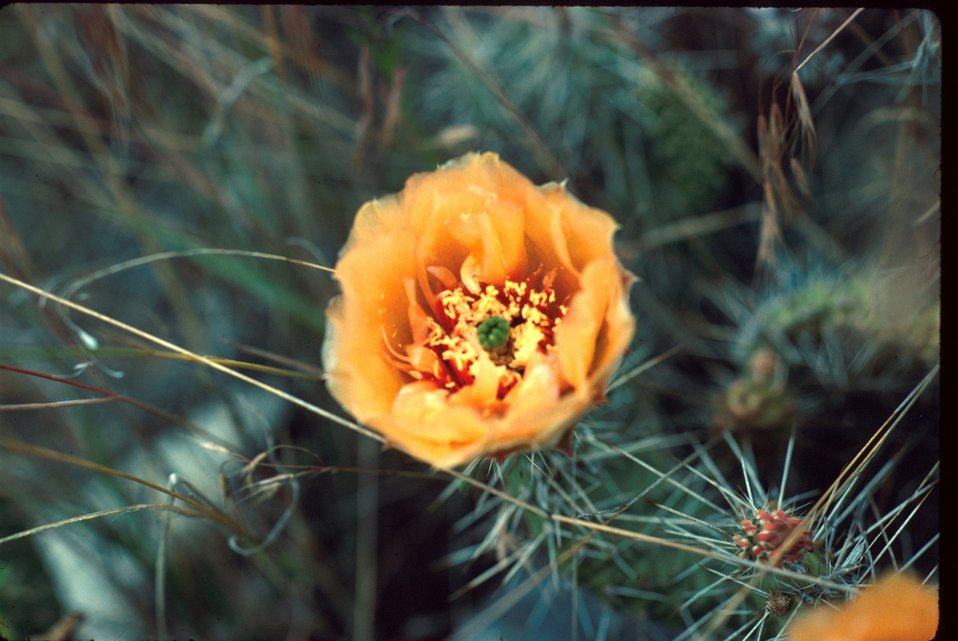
Opuntia prickly pear cactus Wildflower